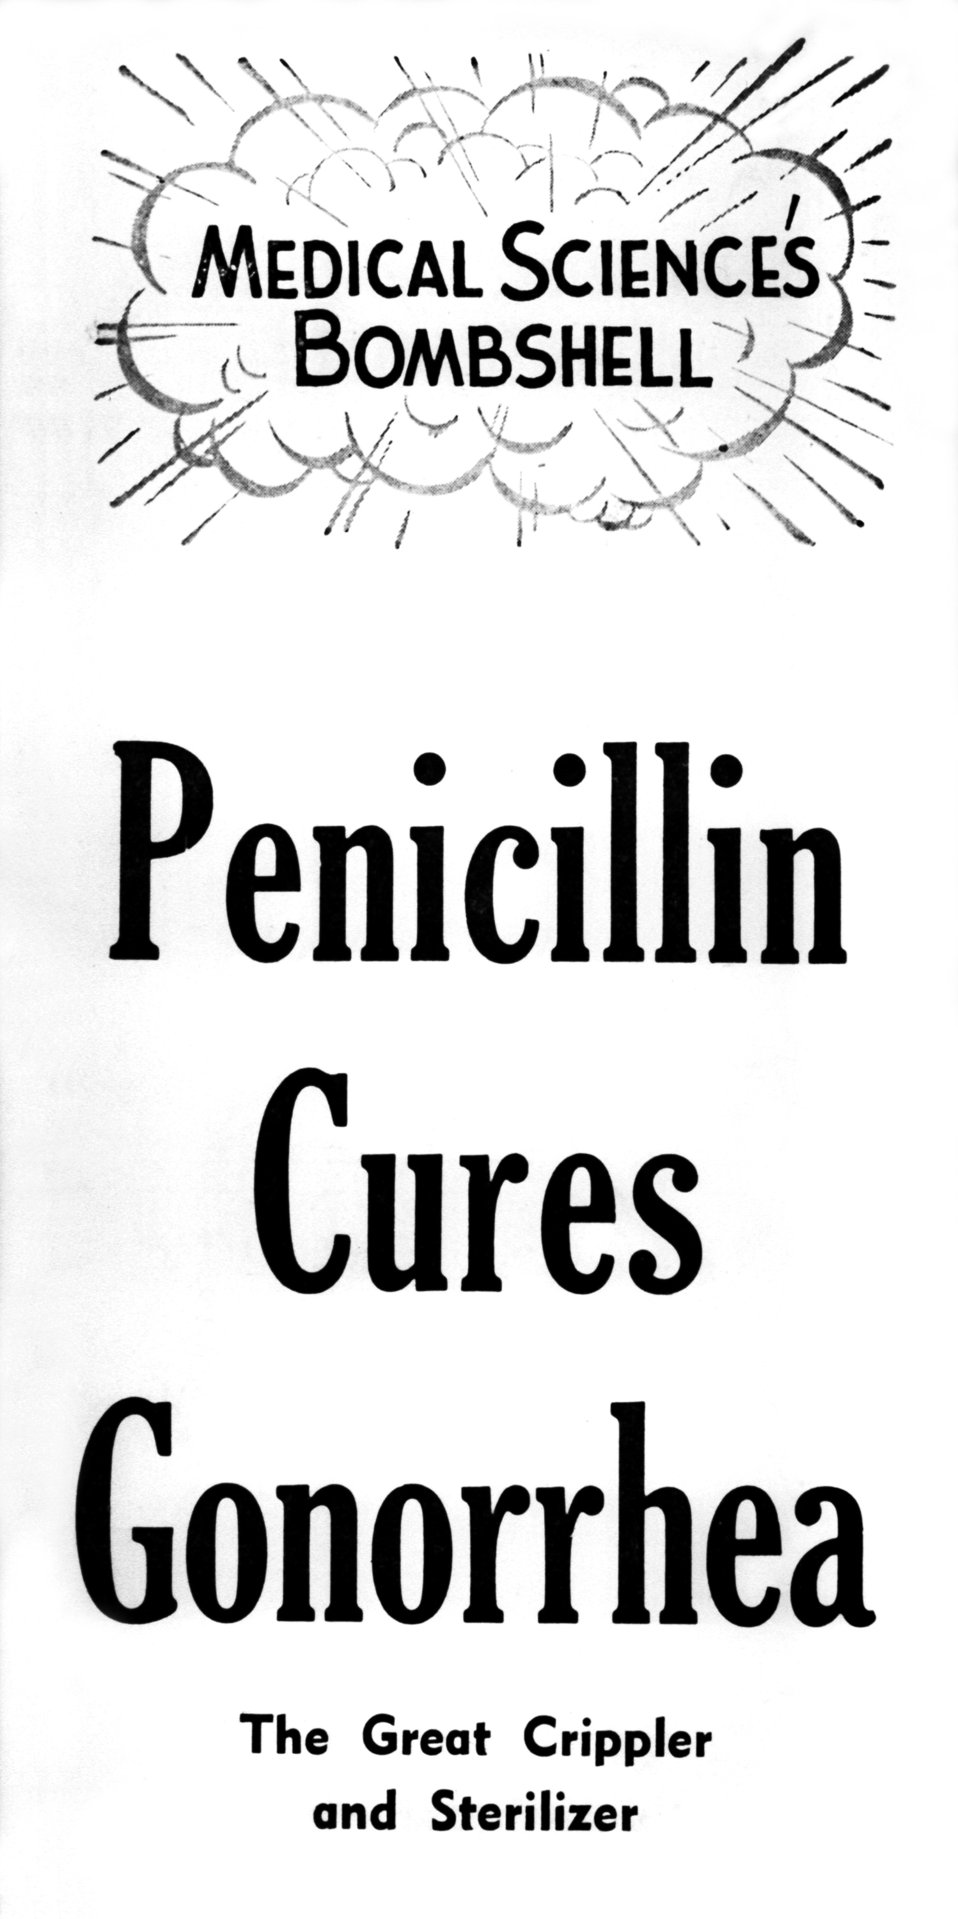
Poster promoting treatment of gonorrhea.